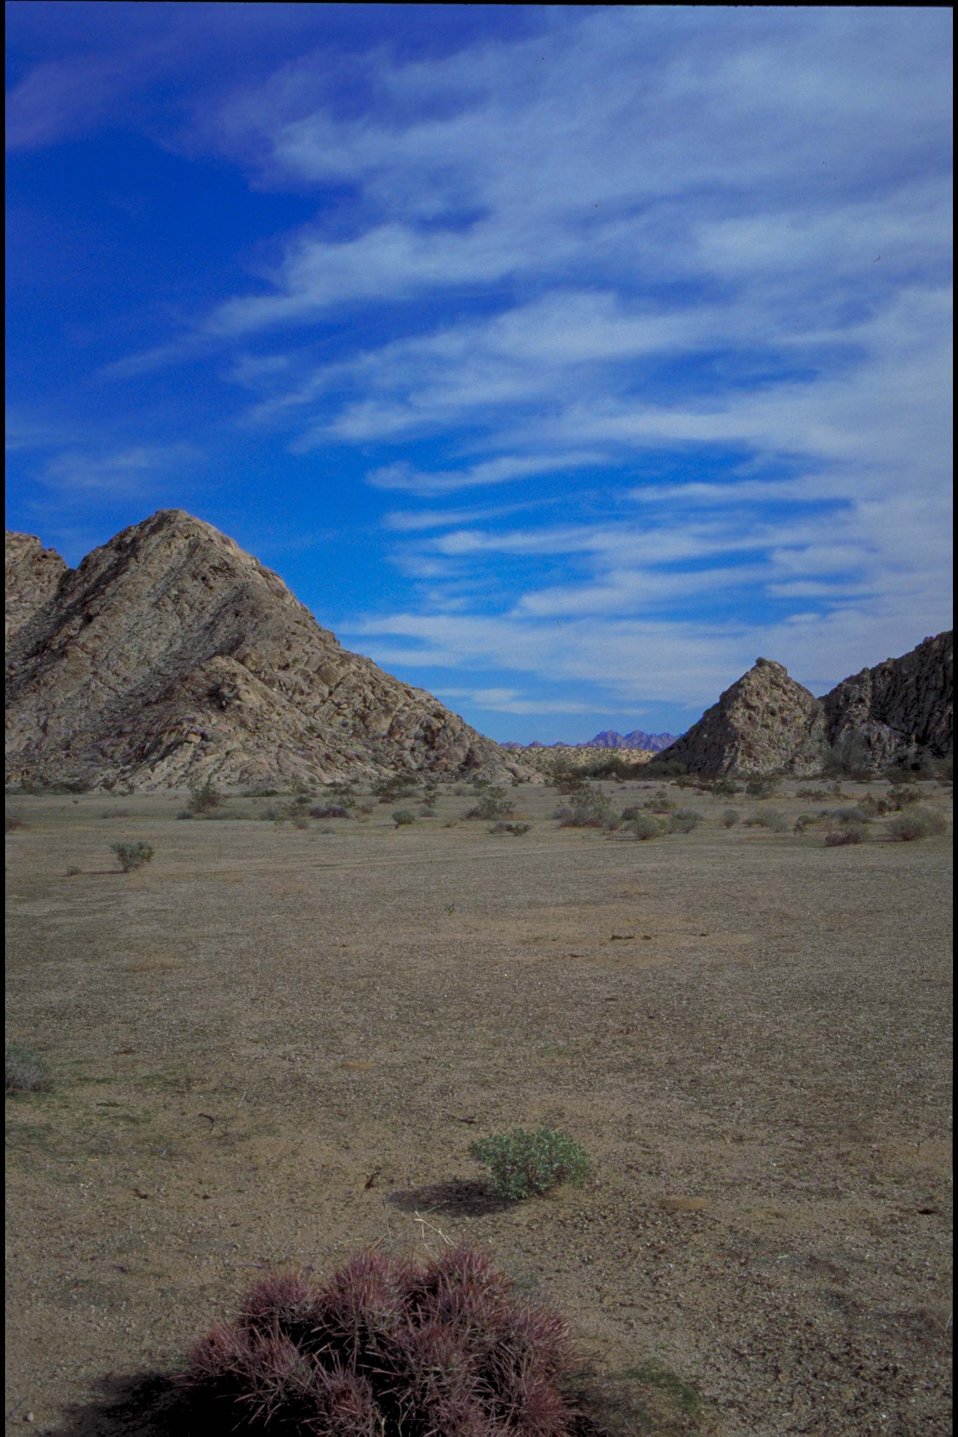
Beautiful landscape in the Arizona desert